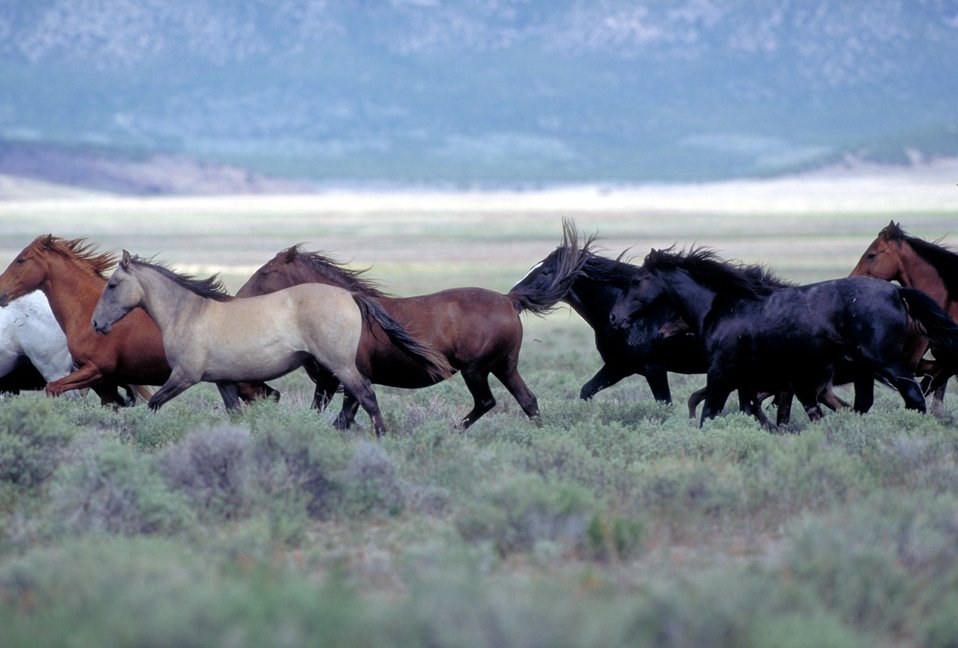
Onaqui Herd near Dugway, Utah.